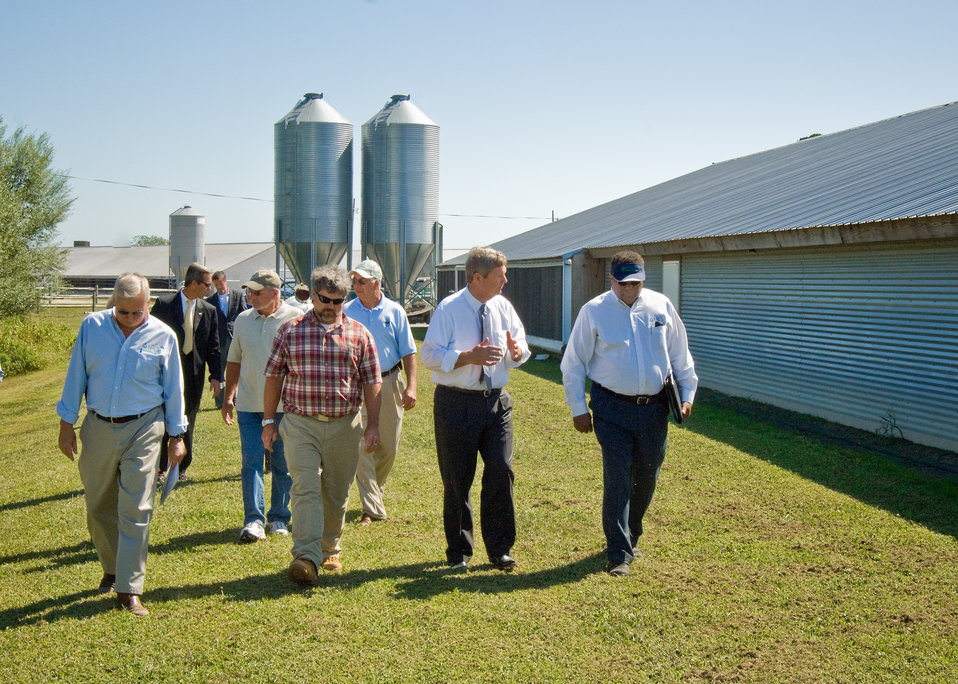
From left: Nelson Brice, Natural Resources Conservation Service, District Conservationist, Billy Thompson, Double B Farms, Agriculture Secretary Tom Vilsack and Jon Hall, Natural Resources Conservation Service, Maryland State Conservationist take a walking tour of Double B Farms, Monday, September 20, 2010. Thompson and his father Bill run a poultry farm in Berlin, Maryland that has been in their family for five generations. Thompson and his father have worked extensively with the Natural Resources Conservation Service practices related to poultry, including Heavy Use Areas, Windbreaks/Shelterbelts, Poultry House Litter Amendments, Poultry Waste Storage System and a Dead Poultry Composting facility all of the programs were funded through the Environmental Quality Incentives Program (EQUIP). USDA Photo 10di1496-113 by Bob Nichols.